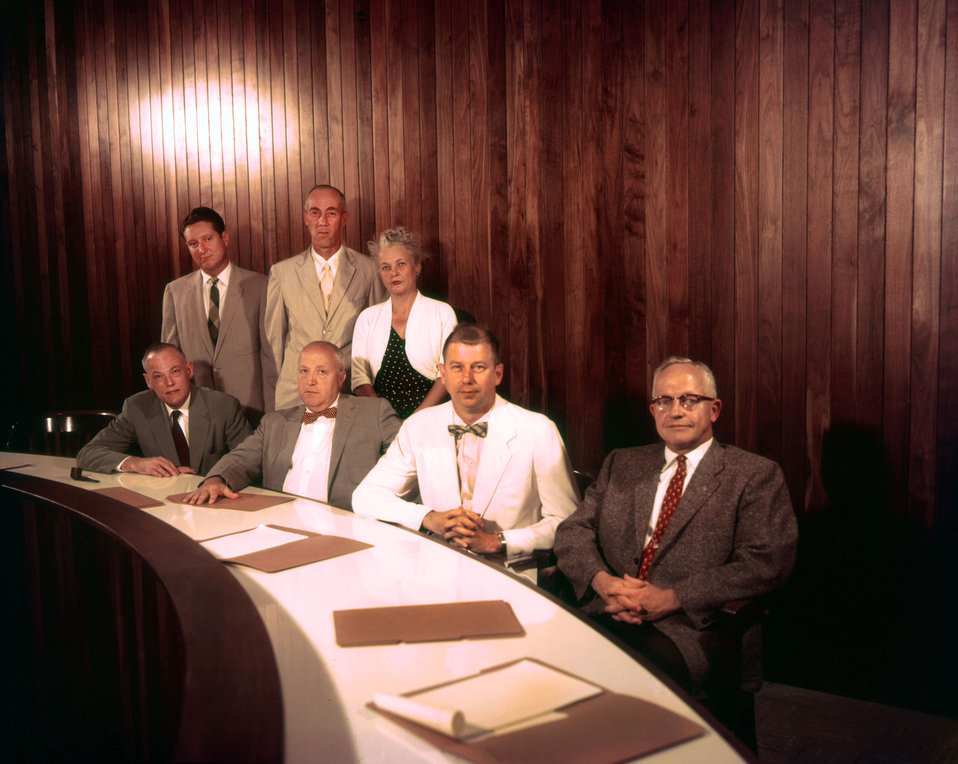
Oak Ridge Town Council

58-486 DOE photo E.D. Mitchell New Municipal Bldg. 6-19-1958 Oak Ridge Tennessee